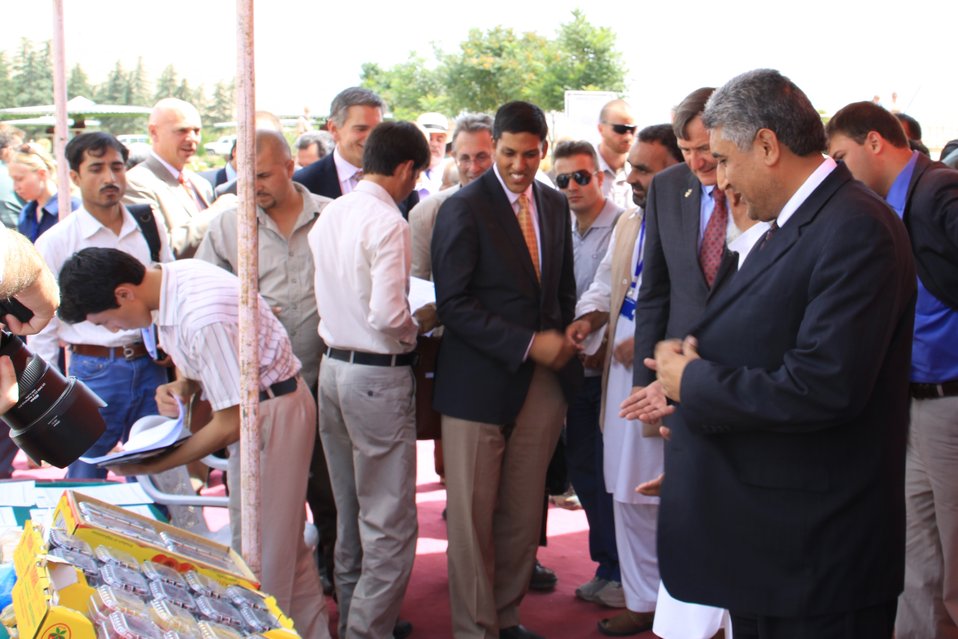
Badam Bagh Farm